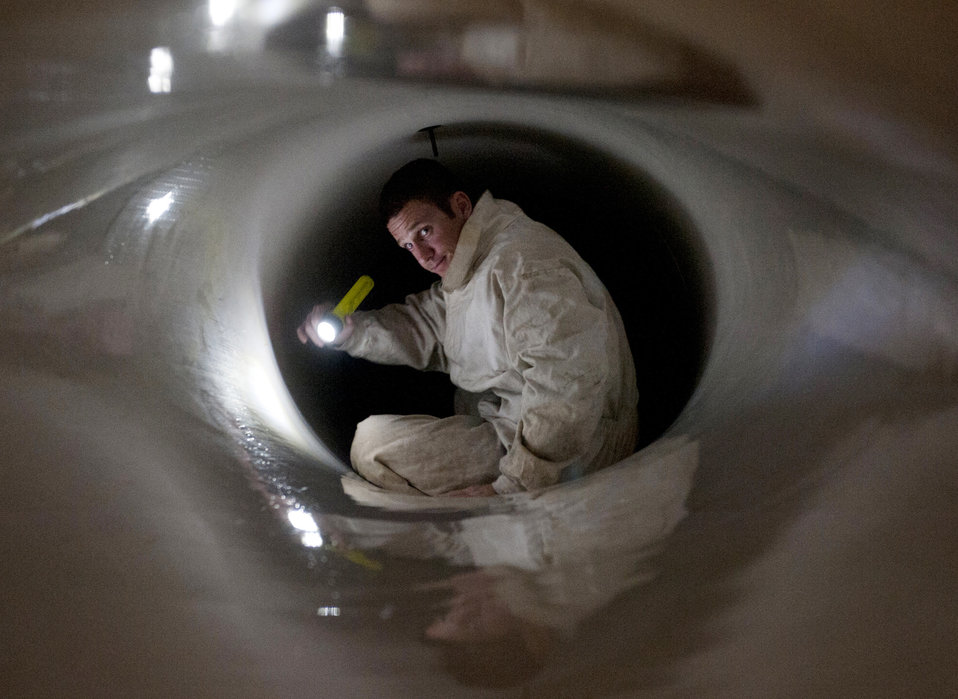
All clear

Tech. Sgt. Chris Pickett inspects the engine intake of an F-16 Fighting Falcon during exercise Green Flag-West 13-02 at Nellis Air Force Base, Nev., Oct. 31, 2012. Pickett is a crew chief assigned to the 187th Fighter Wing, Alabama Air National Guard.